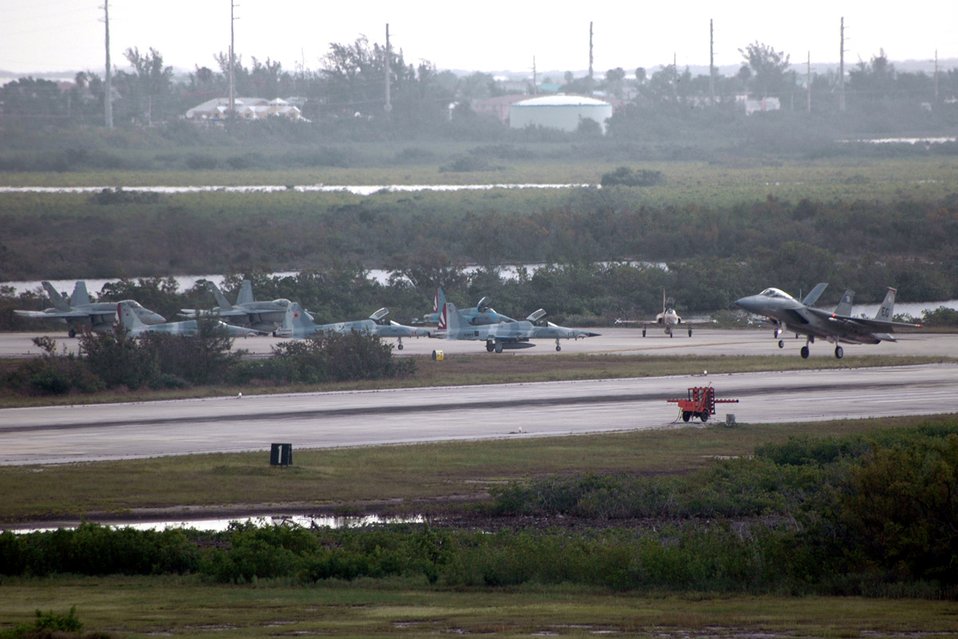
Air Force, Navy join forces for combat training

A 60th Fighter Squadron F-15 Eagle lands at Naval Air Station Key West, Fla., for two weeks of dissimilar air combat training as an exercise in joint training operations with the Navy. More than 200 Airmen and 16 F-15s from the 33d Fighter Wing at Eglin Air Force Base, Fla., are participating in the joint training.